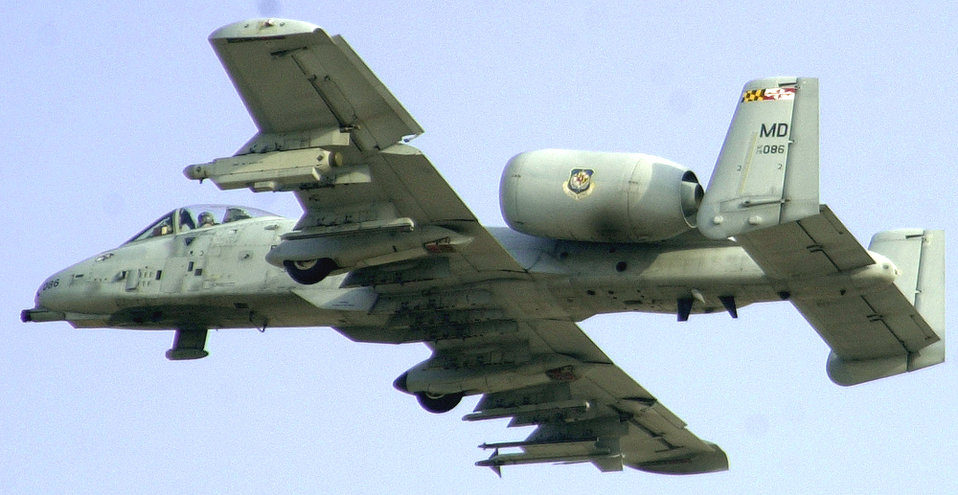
Inert bombing

1990's -- AL UDAIRI, Kuwait -- A Maryland Air National Guard A-10 flies over Al Udairi Test Range here for a practice bomb run using inert bombs.